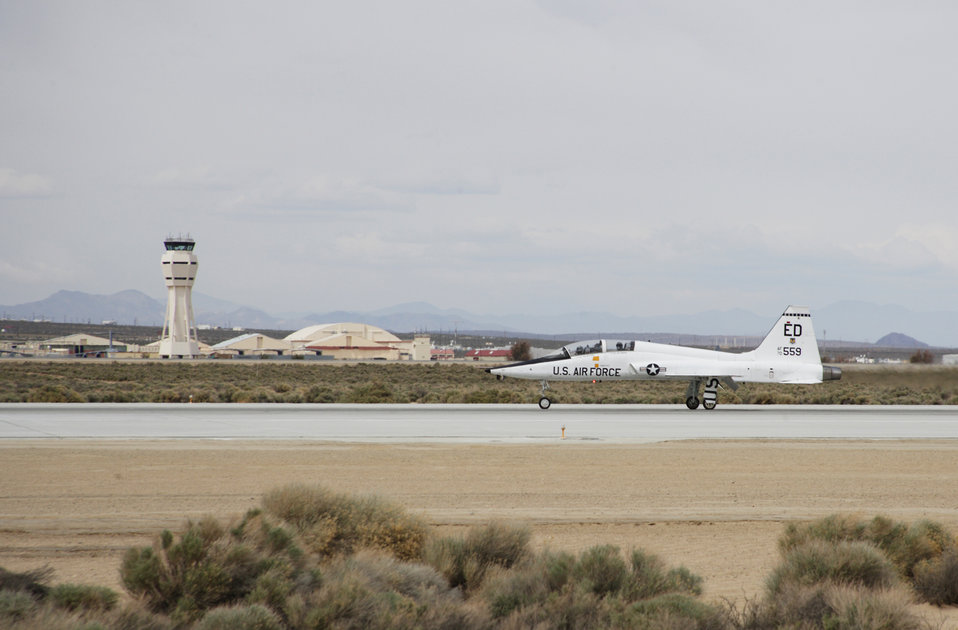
T-38 Talon crashes north of Edwards

A T-38 Talon, like the one landing on an Edwards Air Force Base, Calif., runway April 10, crashed May 21 about nine miles north of the base. The aircraft and its two-person crew were on a flight-test training mission at the time of the accident. The T-38 is a twin-engine, high-altitude, supersonic jet trainer used in a variety of roles because of its design, economy of operations, ease of maintenance and high performance.